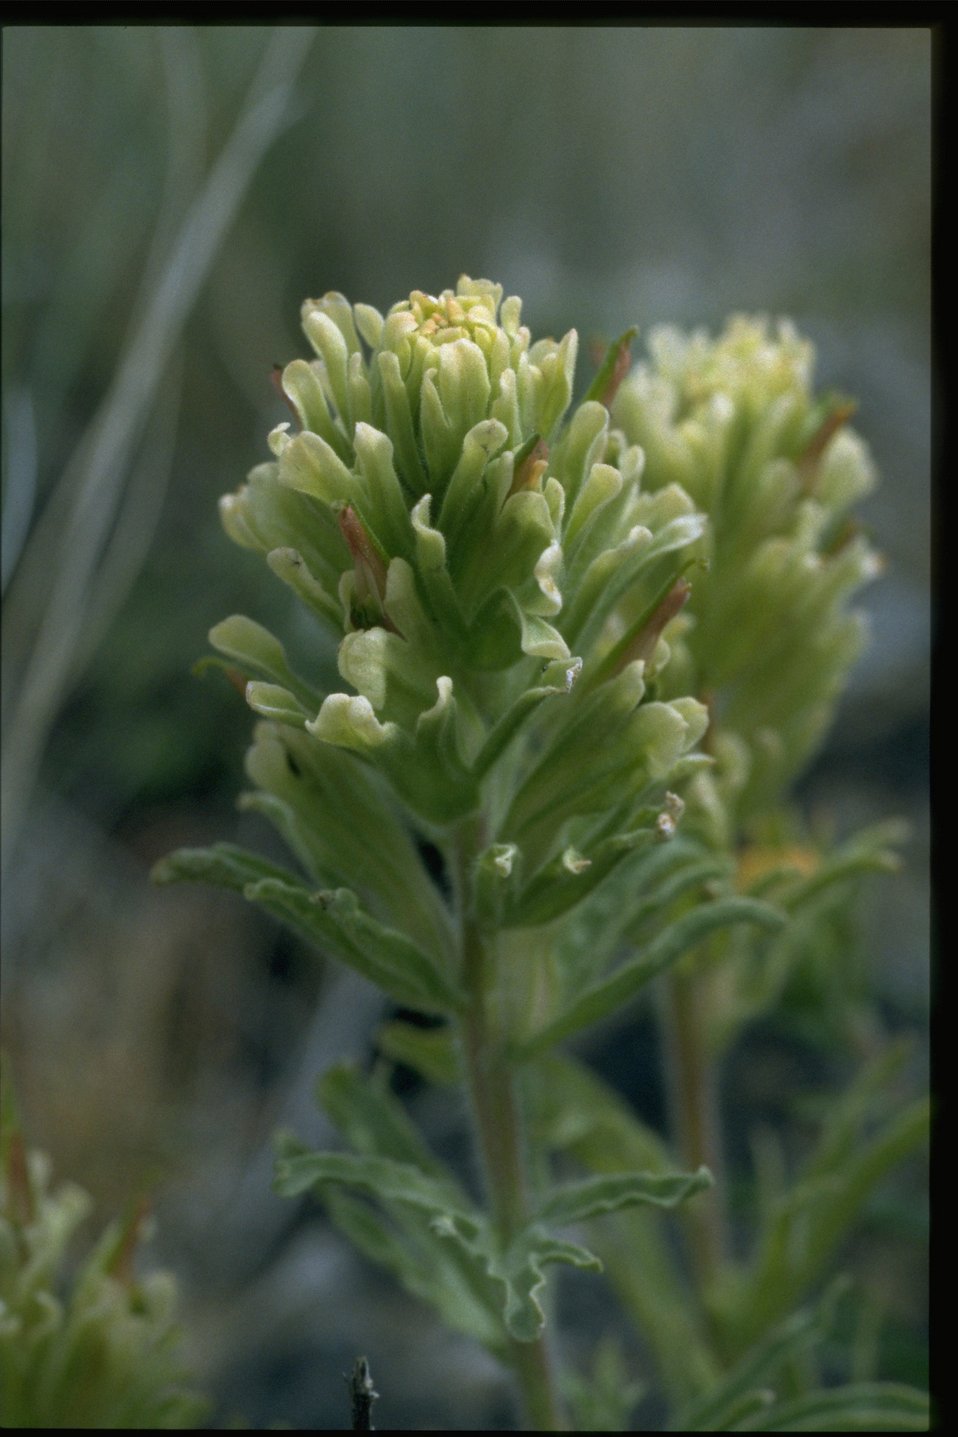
Closeup shot of yellowhairy Indian paintbrush (Castilleja xanthotricha).